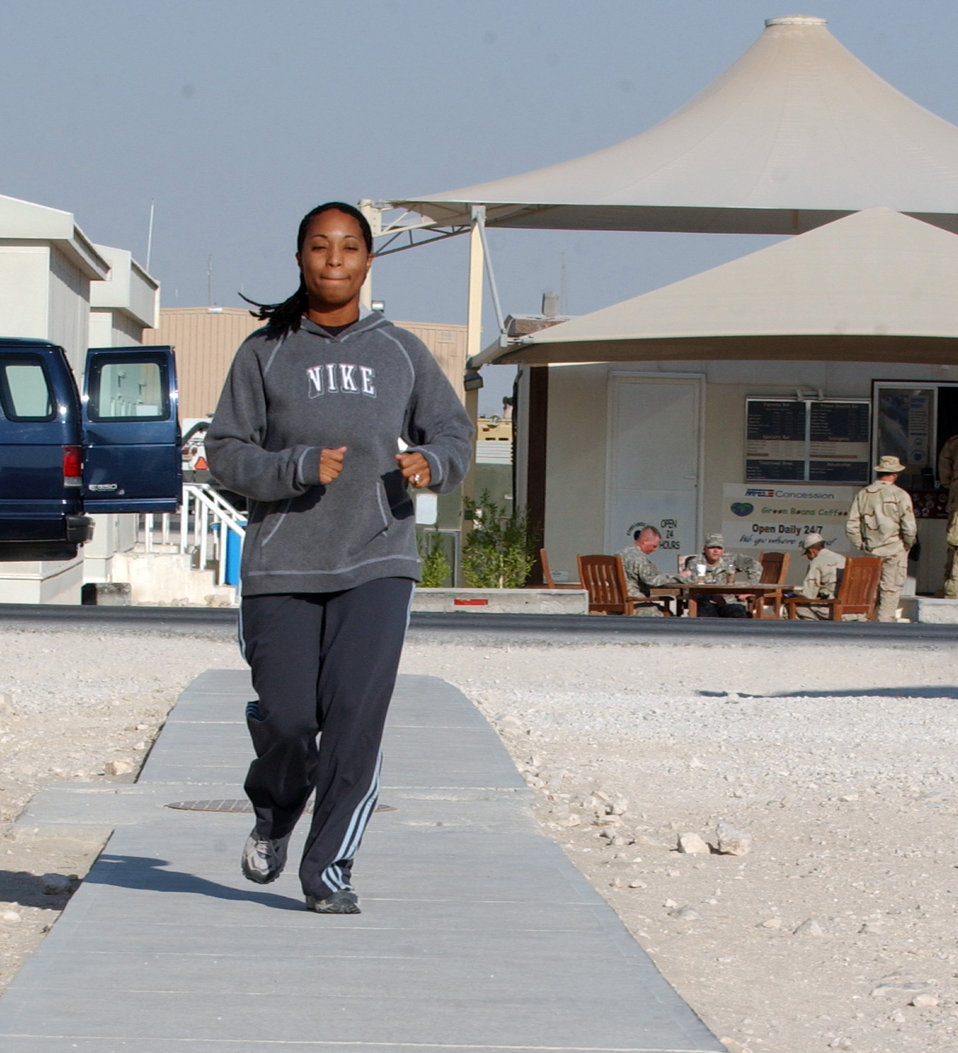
Achieving goals

SOUTHWEST ASIA (AFPN) -- Tech. Sgt. Andrea Allen runs 3 miles during her deployment. She is with the 379th Air Expeditionary Wing's safety office at a forward-deployed location. The 3-mile run is a goal she made when she first arrived here.